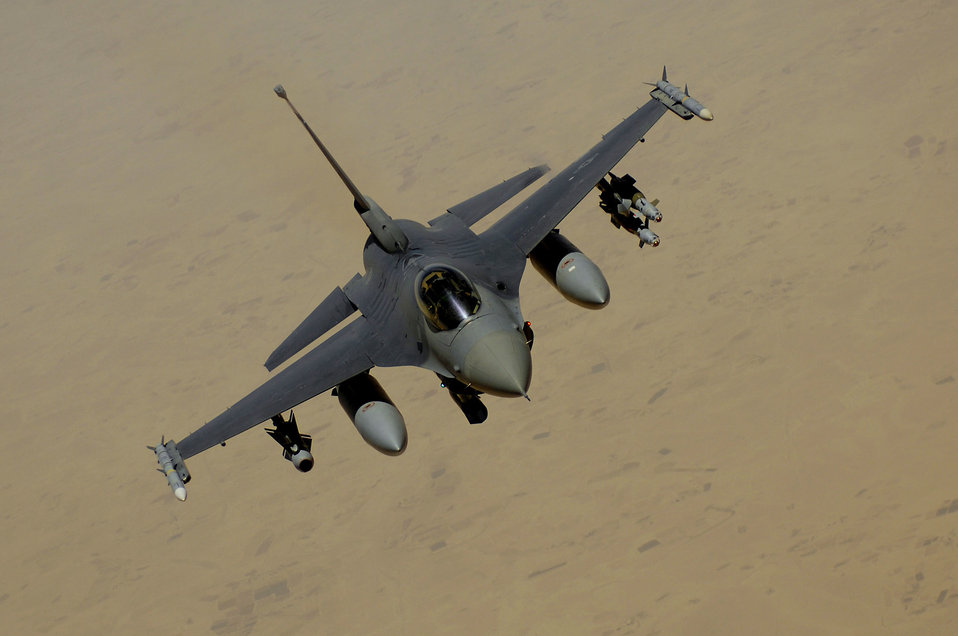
F-16s quells enemy attack

An F-16 Fighting Falcon flies over Southwest Asia. The F-16 is highly maneuverable and has proven itself in air-to-air combat and air-to-surface attack.